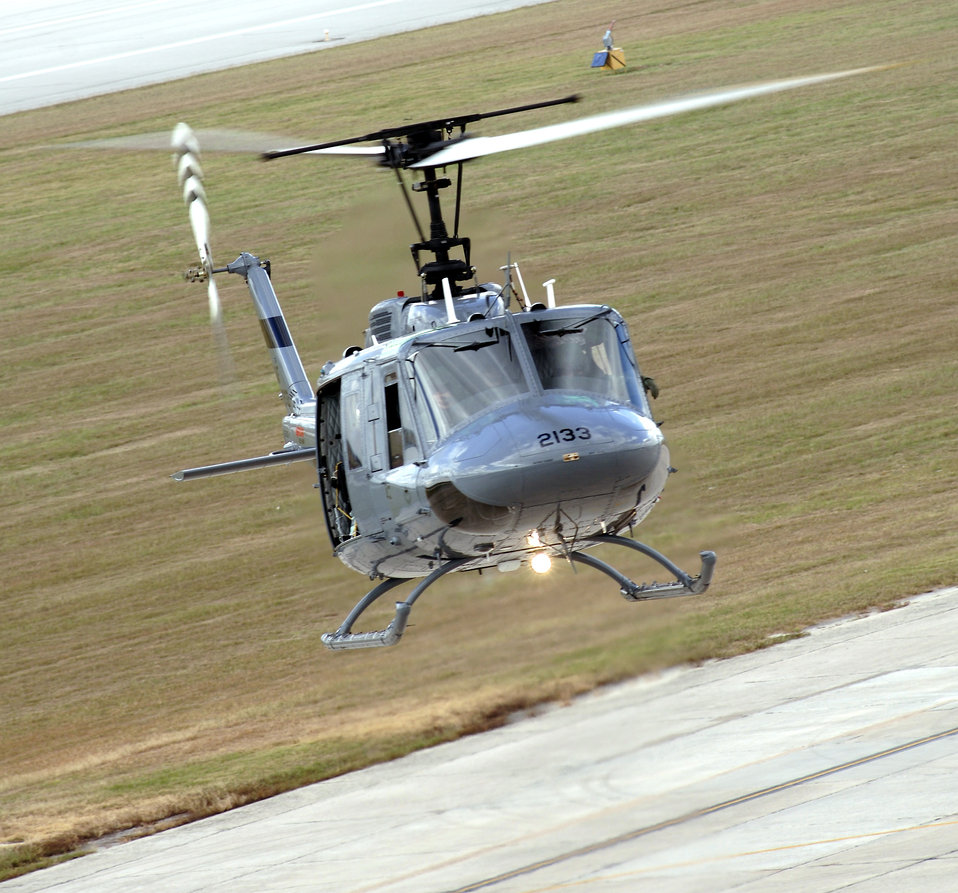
New Huey

RANDOLPH AIR FORCE BASE, Texas (AFPN) -- Capt. John Beurer (right seat) pilots the TH-1H trainer helicopter, with Jeff Cutrell, instructor pilot. This is the first of 24 TH-1H's that will be modified to train Air Force helicopter student pilots. TH-1H Huey II is the newest aircraft to join the Air Force inventory. The chopper has an enlarged nose, wider main rotor blades and the tail rotor is now on the right side for better performance. Inside it has undergone an extensive refurbishment including upgraded components and a new avionics suite with a glass cockpit.